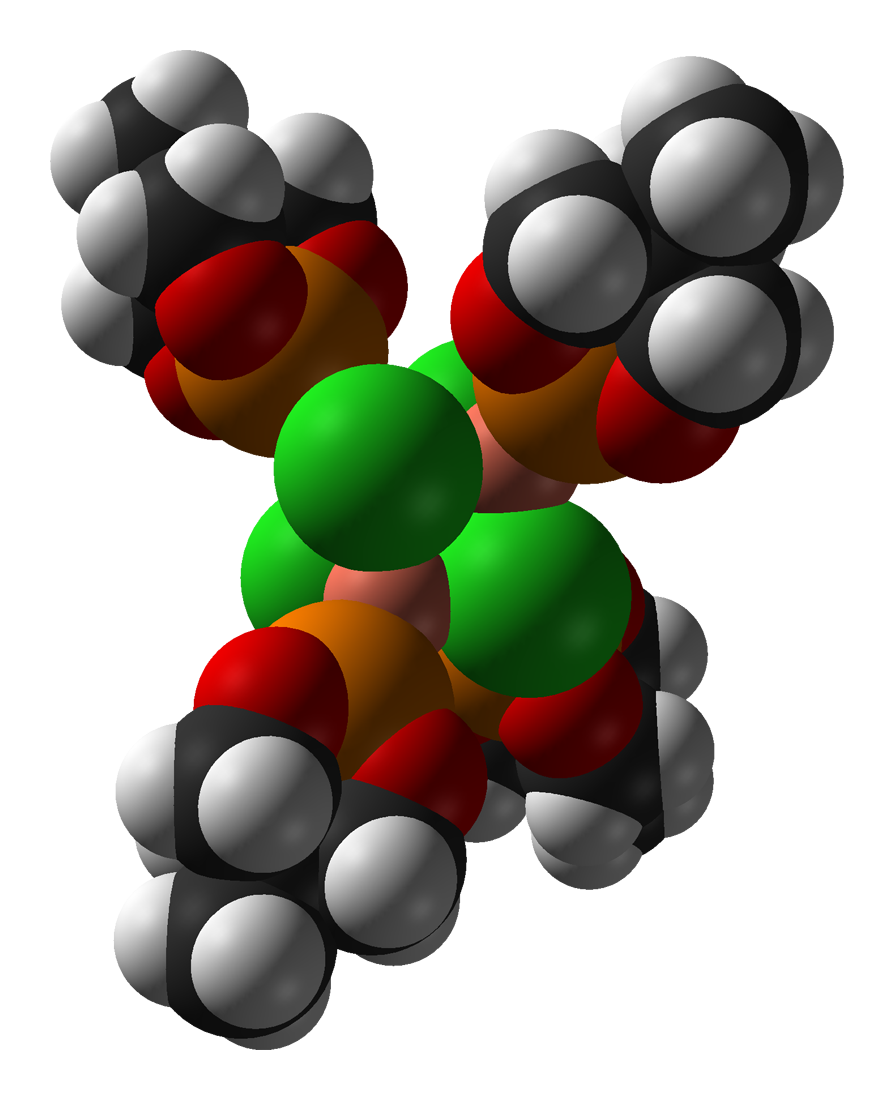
Space-filling model of the caged phosphite complex [CuCl(MeCage)]4 as found in the crystal structure. Colour code: Carbon, C: black Hydrogen, H: white Phosphorus, P: orange Oxygen, O: red Copper, Cu: orange-pink Chlorine, Cl: green Crystal structure by X-ray diffraction from J. Chem. Cryst. (2003) 33, 341-347. Model constructed in CrystalMaker 8.1. Image generated in Accelrys DS Visualizer.